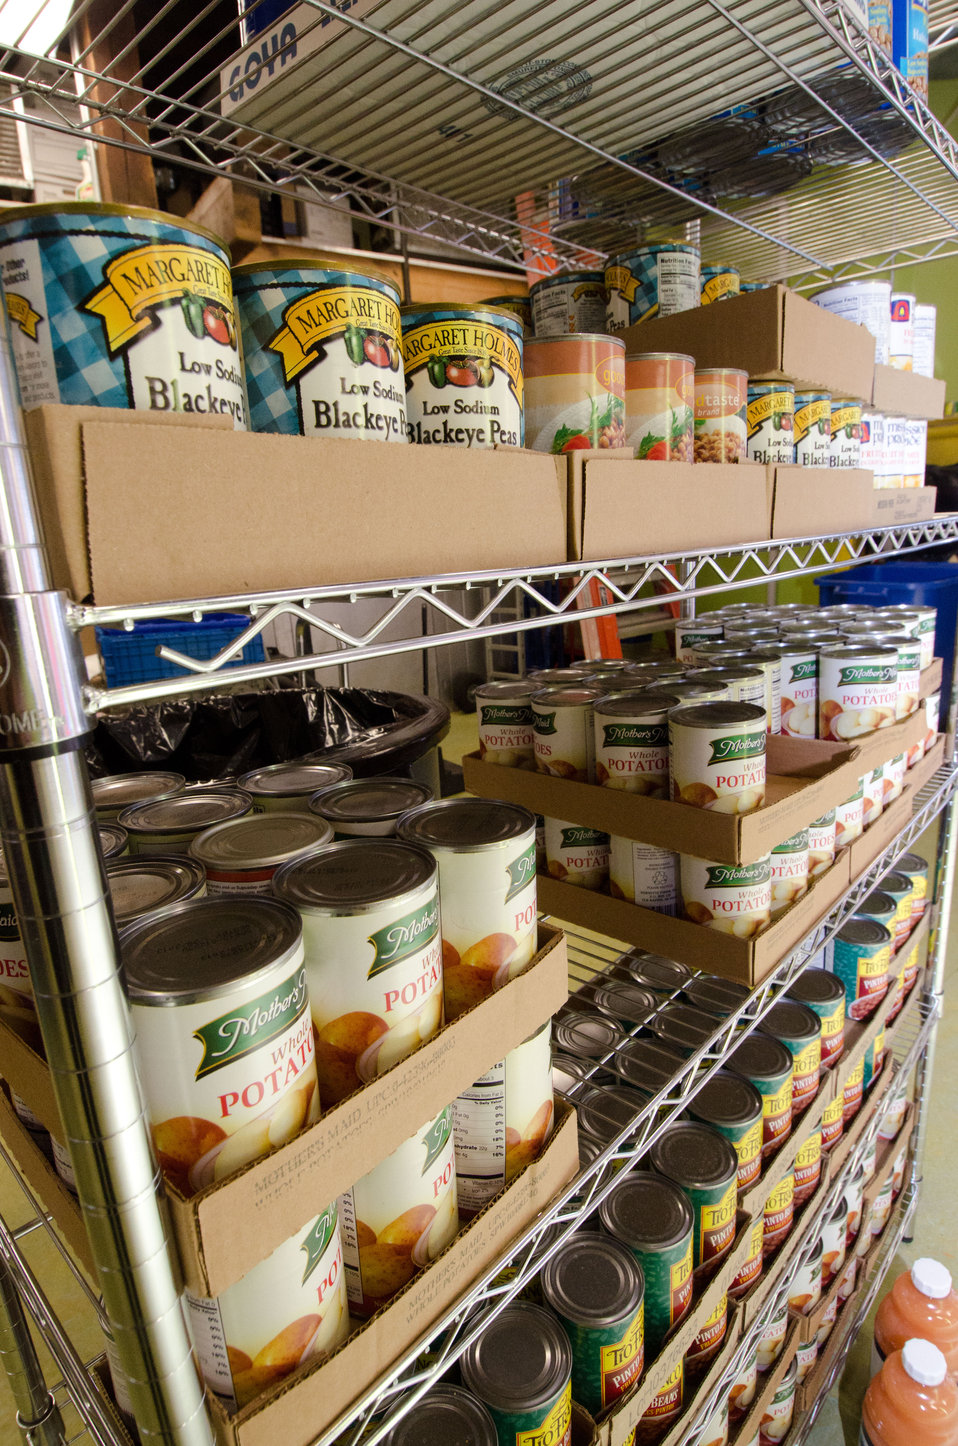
Shelves stocked with supplies at the Bread for the City in Washington, DC, on Friday, April 29, 2011.